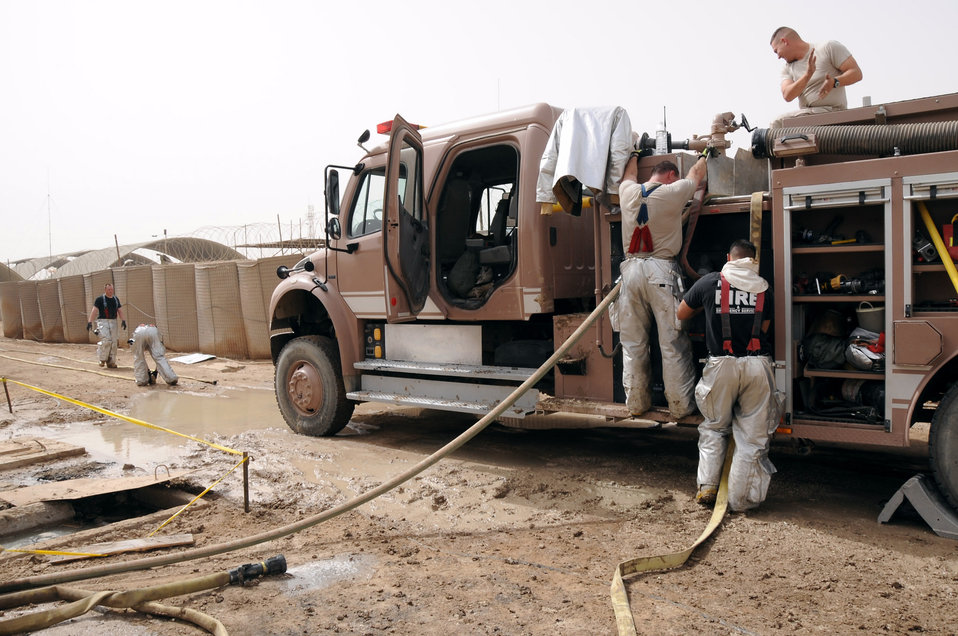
Airmen respond to coalition fire in Iraq

The 407th Expeditionary Civil Engineering Squadron firefighters pack up their gear after responding to a fire in the Romanian camp April 11 at Ali Base, Iraq. The Air Force emergency response forces respond to all emergencies here including coalition partners.